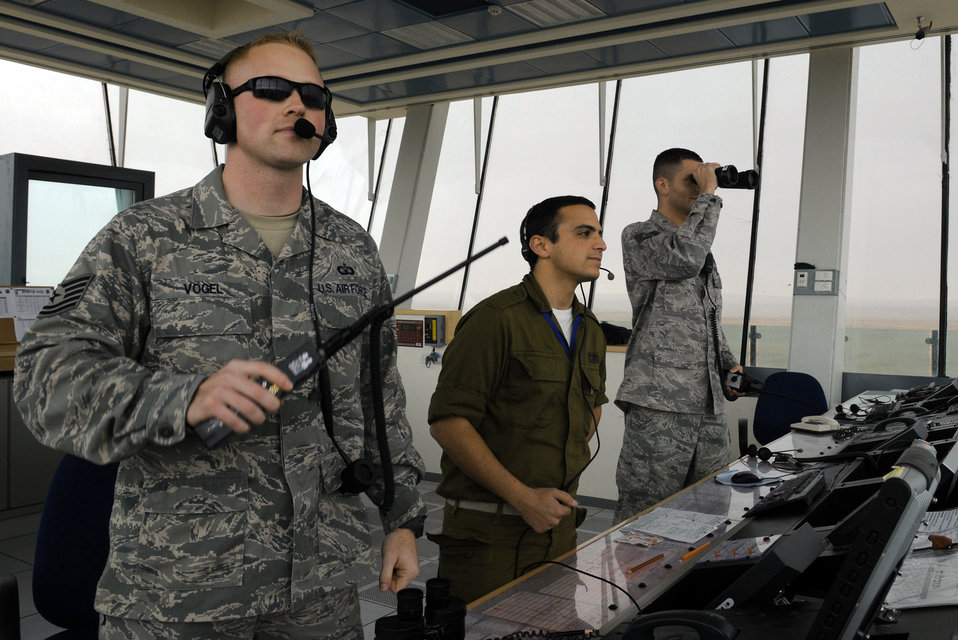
Ramstein Airmen participate in exercise in Israel

Tech. Sgt. Jeff Vogel, Israeli air force member Eitan Haredim and Tech. Sgt. Shawn Smith look out on the flightline Dec. 8, 2009, at Nevatim Air Force Base, Israel. The 435th Contingency Response Group air traffic controllers were the liaison between the Israeli controller and the American mission during an exercise. Sergeant Vogel is a 435th CRG contingency aircraft controller, and Sergeant Smith is a 435th CRG contingency airfield manager.